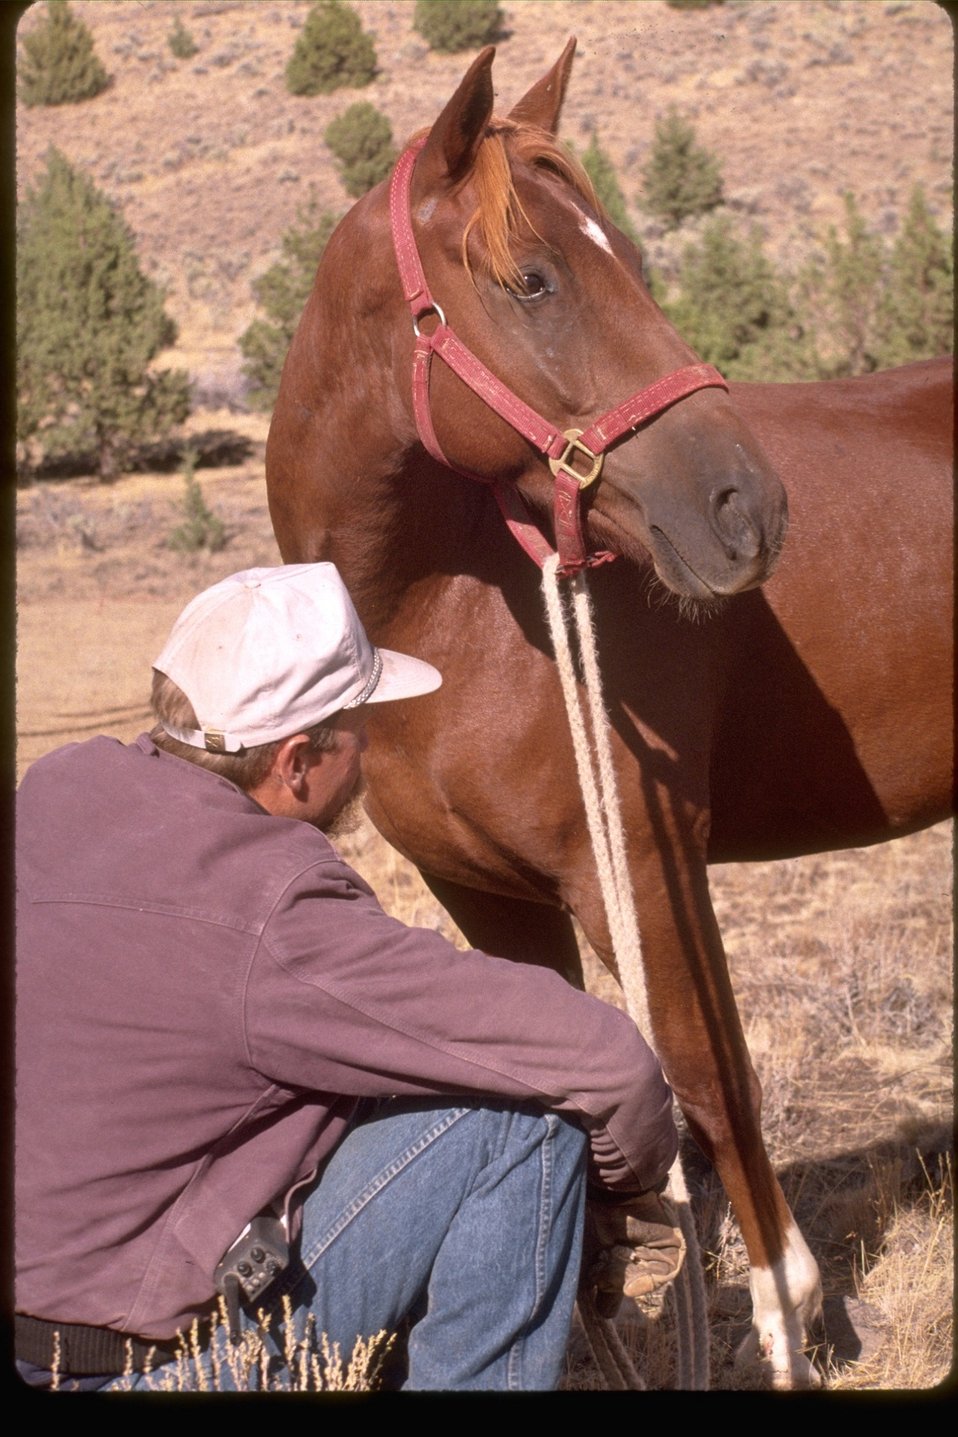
Wildhorse wrangler, Greg Allum, holds Prather horse near trap entrance at Kiger Herd Management Area.